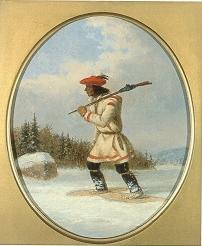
'Indian Hunter', oil paintings by Cornelius Krieghoff, 10.5 x 8.5 in.